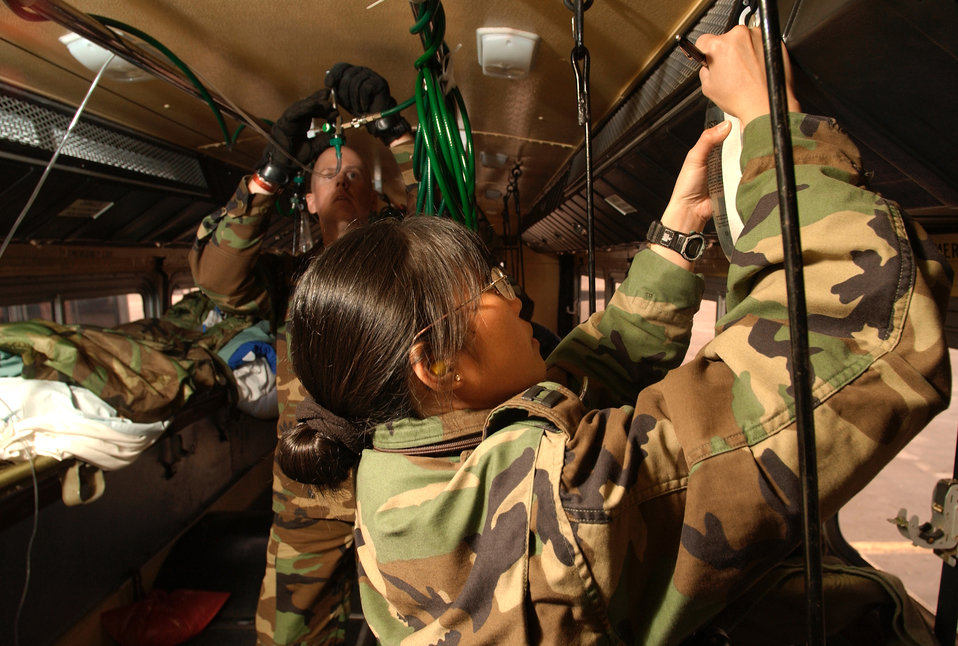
Martin

RAMSTEIN AIR BASE, Germany -- Capt. Adelver Martin, a registered nurse with the 86th Aeromedical Staging Facility here, checks on wounded patients before transporting them from Ramstein to Landstuhl Regional Medical Center on March 24. Troops wounded in Operation Iraqi Freedom are moved to Germany if they need advanced treatment.